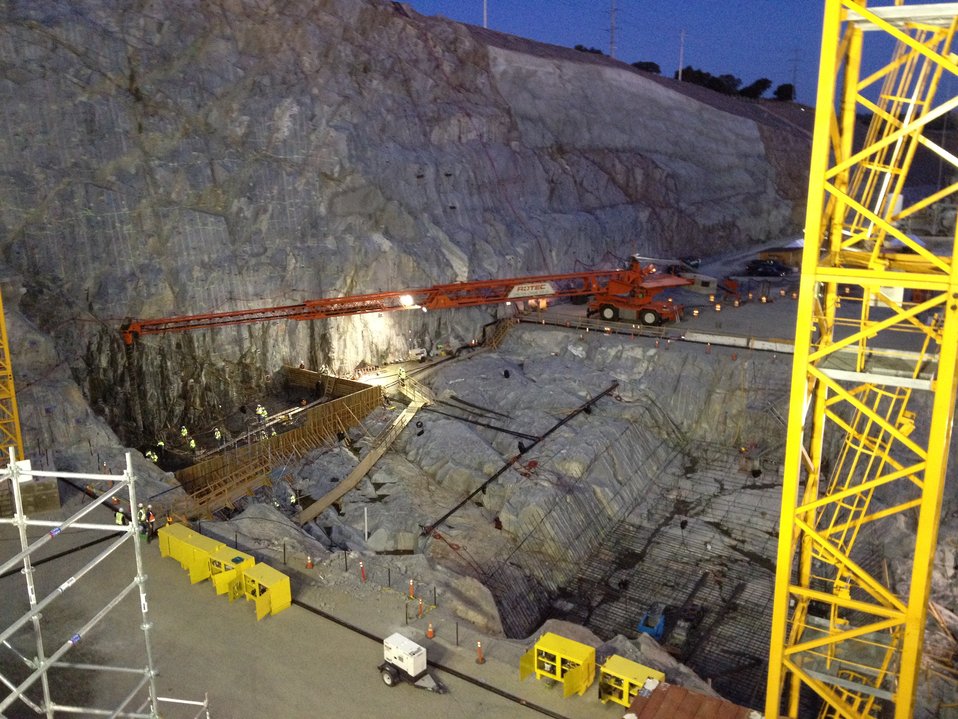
Nighttime concrete placement at Folsom spillway

The U.S. Army Corps of Engineers Sacramento District works at night during concrete placement for the auxiliary spillway at the Folsom Dam Joint Federal Project in Folsom, Calif., June through August 2012. The work is being done at night when temperatures are lowest, aiding the concrete’s cure. The district is building the auxiliary spillway in cooperation with the U.S. Bureau of Reclamation, the state’s Central Valley Flood Protection Board and the Sacramento Area Flood Control Agency to improve the safety of the existing Folsom Dam in Folsom, Calif., and reduce flood risk for the greater Sacramento area. (U.S. Army courtesy photo/Released)